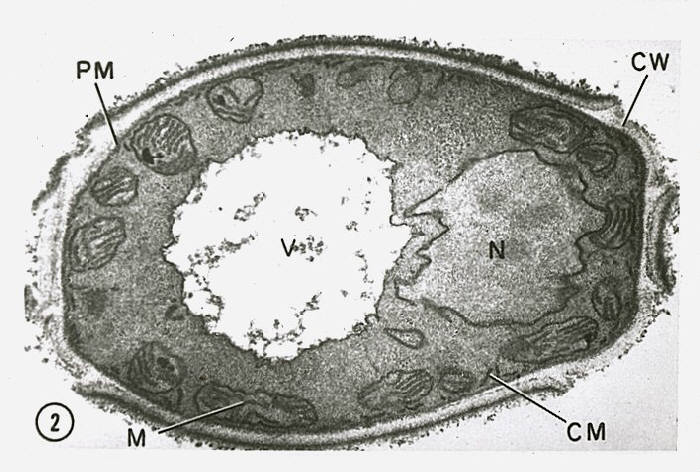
This transmission electron micrograph (TEM) revealed some of the ultrastructural morphology displayed by a Candida sp. fungal organism.